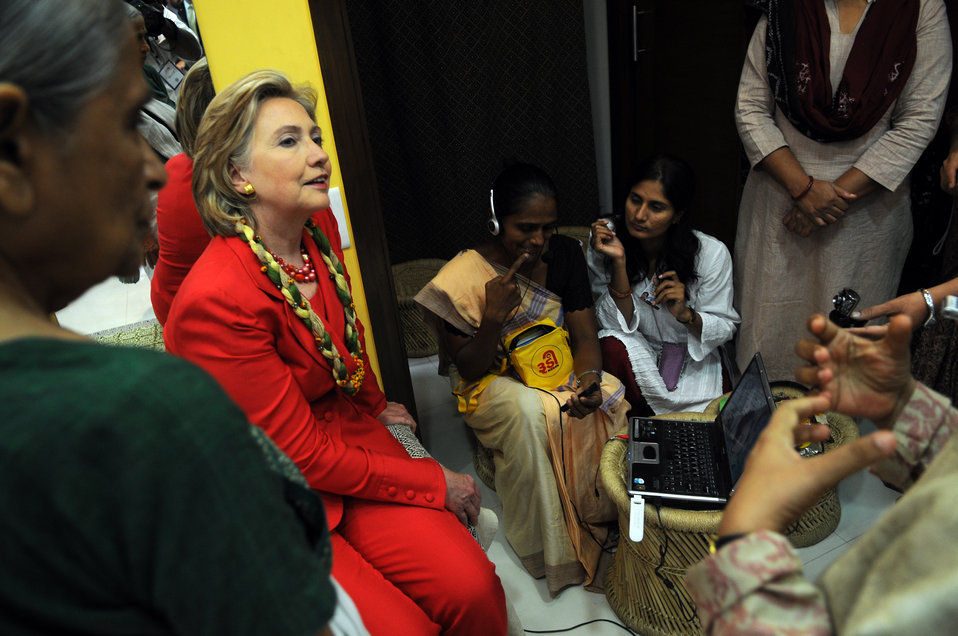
Secretary Clinton Uses VOIP To Exchange Greetings With 1000 Rural Women

U.S. Secretary of State Hillary Rodham Clinton listens as women artisans explain how they use new internet technology communicate with their peers throughout rural Gujarat, India. Secretary Clinton sent greetings to 1000 women through their audio-video connection Voice Over Internet Protocol connection (VOIP) in Mumbai, India July 18, 2009.